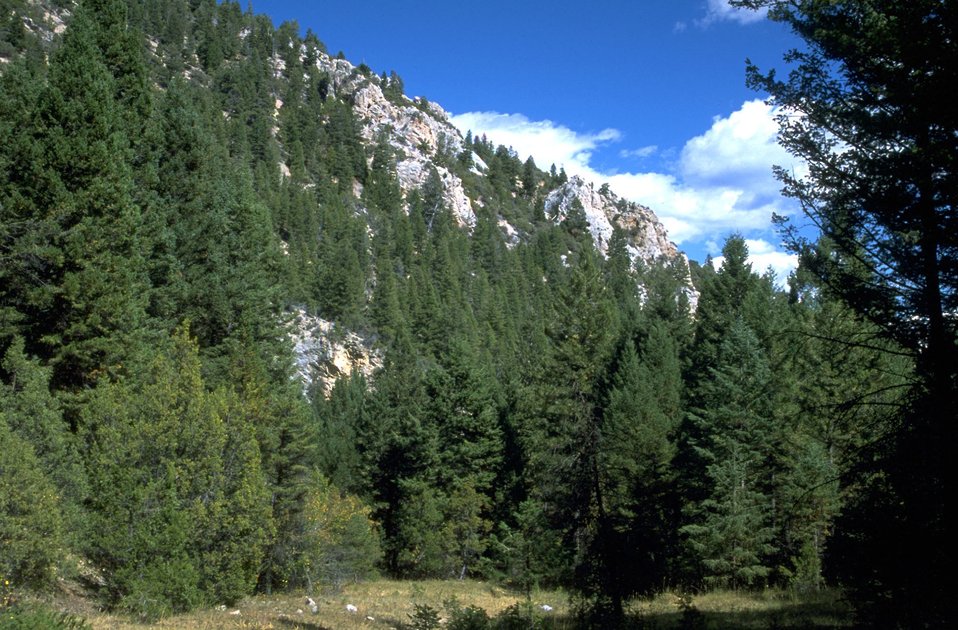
Rock outcrop in a forest setting